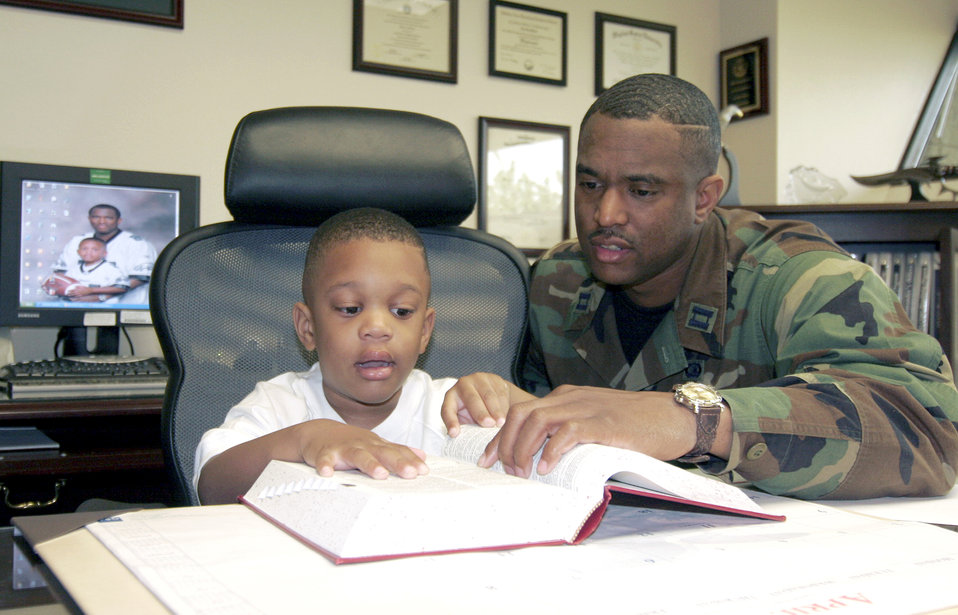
Take Our Daughters and Sons to Work Day

Khyre Silver visits his dad, Capt. Eric Silver, during the national Take Our Daughters and Sons to Work Day at Mountain Home Air Force Base, Idaho, on Thursday, April 27, 2006. Captain Silver is the 366th Fighter Wing executive officer.